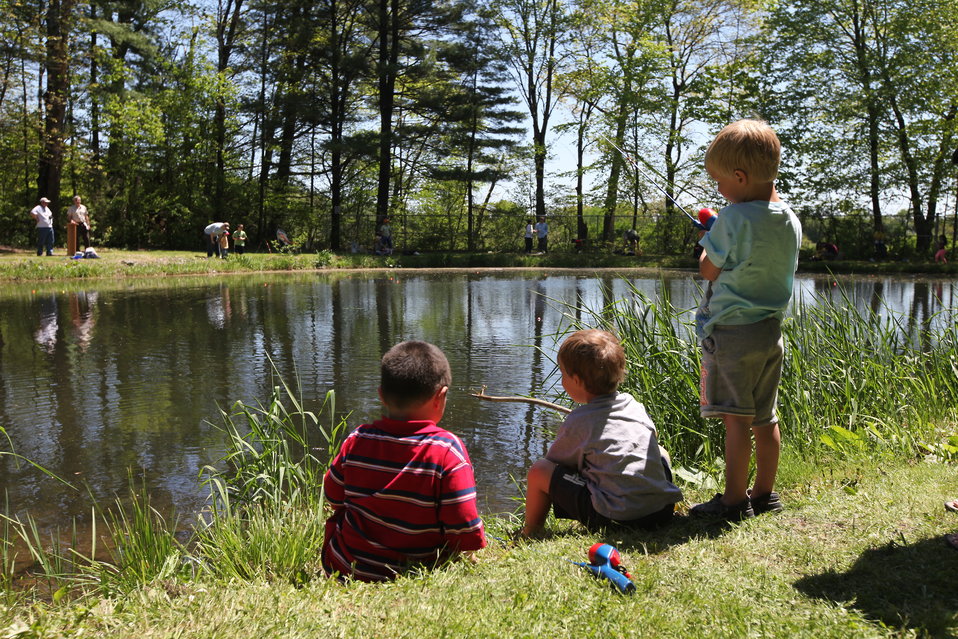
Youth Fishing Derby 2012

Megan Nagel/USFWS